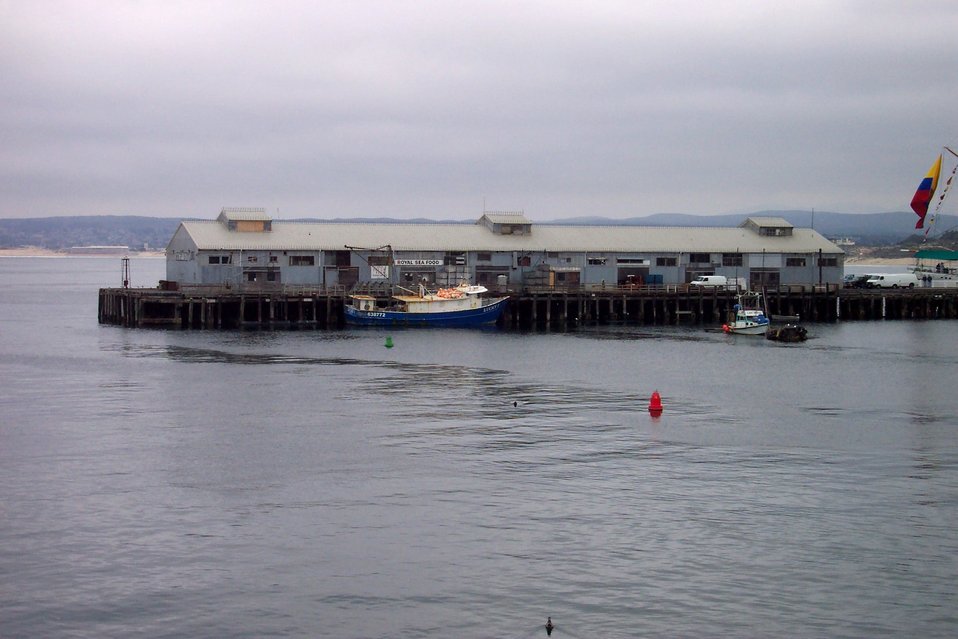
A scene reminiscent of a Steinbeck novel - the fishing vessel LUCKY tied up at a commercial wharf at Monterey.